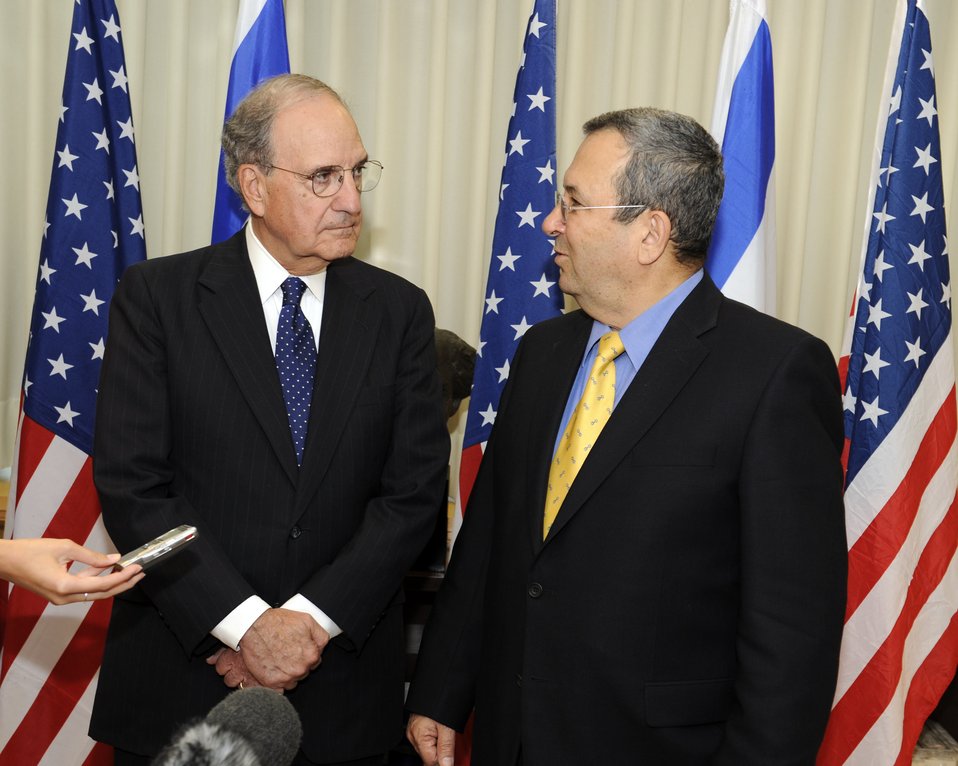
U.S. Special Envoy George Mitchell Meets With Israeli Defense Minister

U.S. Special Envoy George Mitchell with Israeli Minister of Defense Ehud Barak before their meeting in Tel Aviv, Israel July 26, 2009.